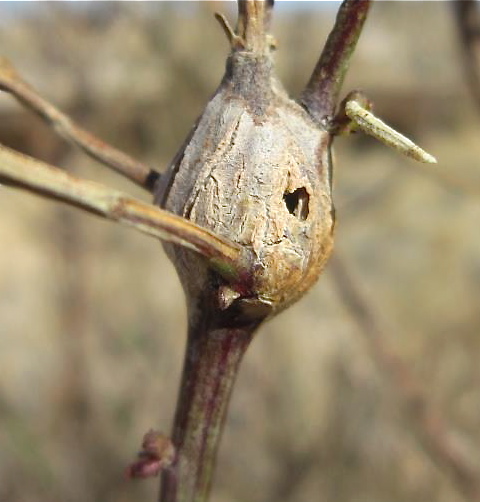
1st insects have emerged

...from this gall on a seep willow at Ash Meadows National Wildlife Refuge in NV.
Photo: USFWS
A refuge staffer tells more about this March 1, 2012 photo:
A female insect will lay her eggs on the branches, which causes a chemical reaction that interferes with the growth of the plant stem and a gall is created.
The eggs stay in this protective chamber all winter, until spring when they develop into larvae, chew their way out, then fall to the ground and transform into an adult. This is a great photo of the gall and the exit hole where the larvae chewed its way out. The gall doesn't harm the plant.